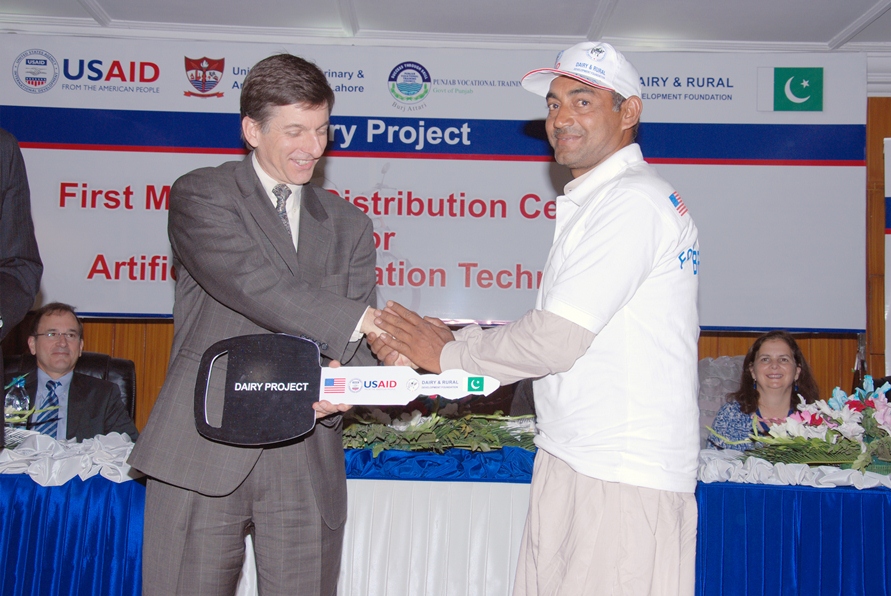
USAID Mission Director Dr. Andrew Sisson presenting motorcycle keys to a successfull AI technician 2